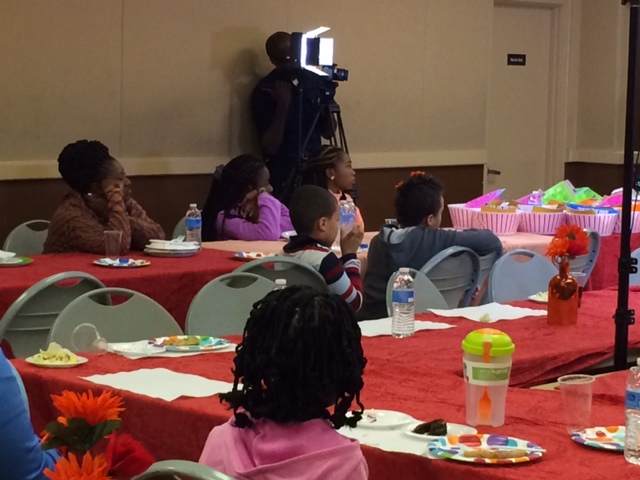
Kids Get the Facts during NDFW

Folks from Orlando, Florida are 'Shattering the Myths' during the 2014 National Drug Facts Week at Orlo Vista Park.